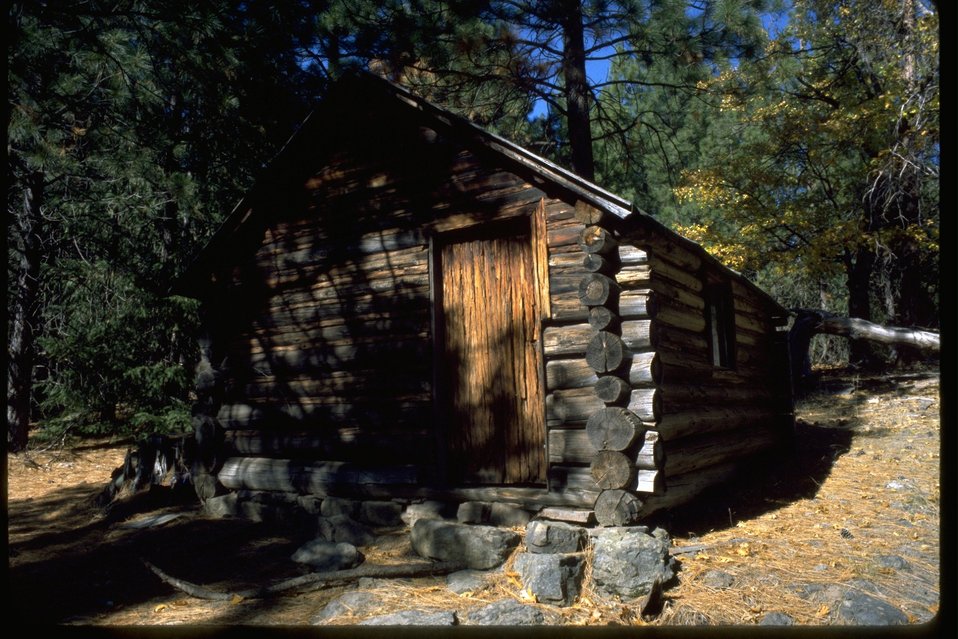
Old Log Cabin.